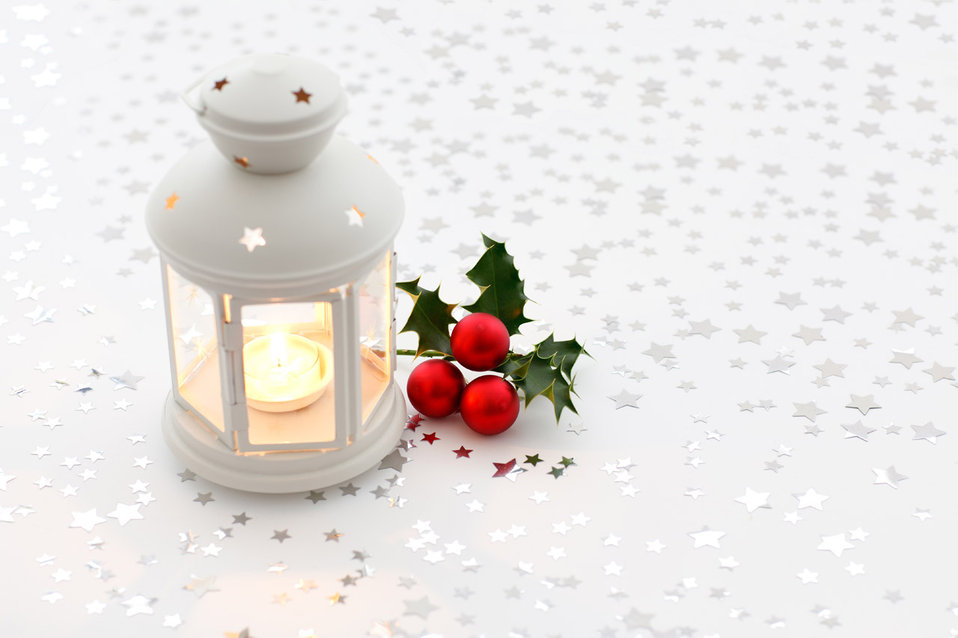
Lantern and holly on starry background.